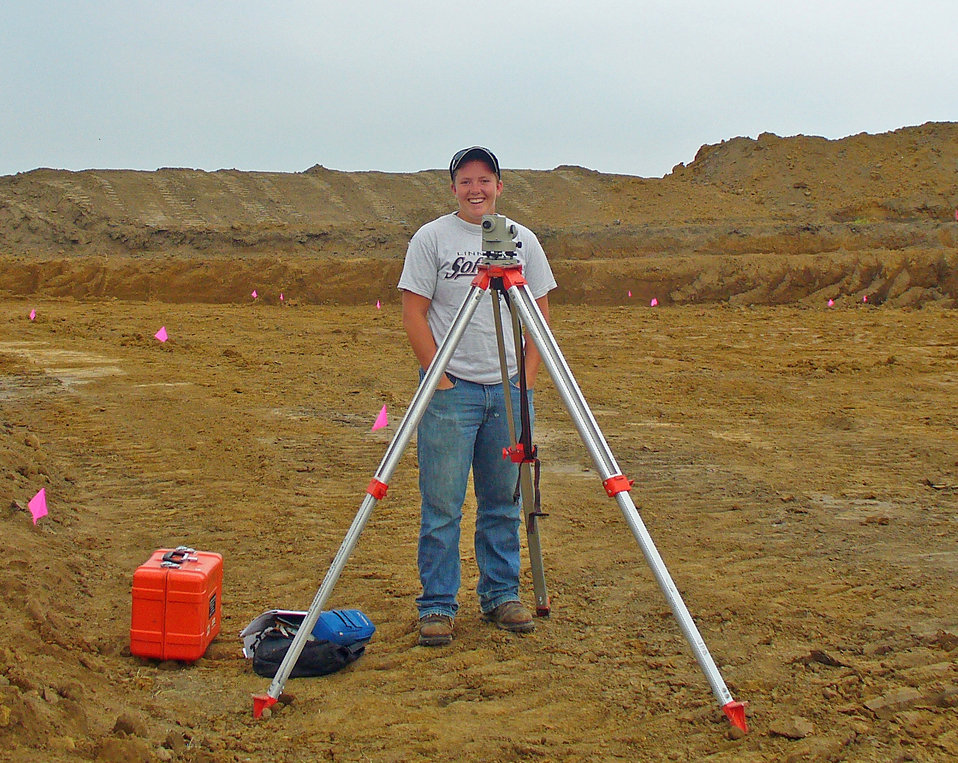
Bulman-a

The U.S. Department of Agriculture’s (USDA) Natural Resources Conservation Service (NRCS) Earth Team Volunteer Kelsey Bulman assists the Caledonia, MN field office in surveying a pollution abatement project for a waste management system.